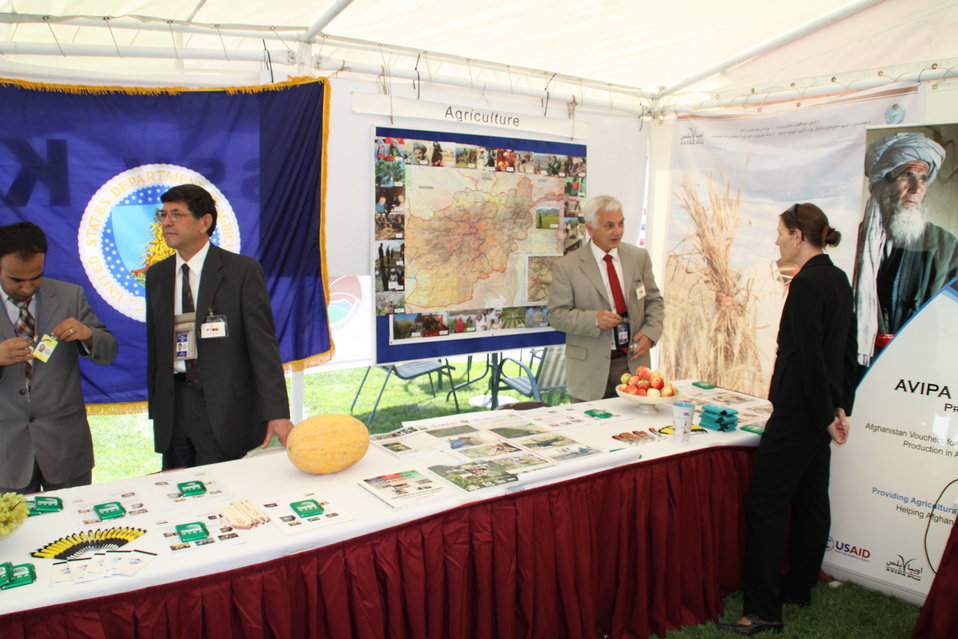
Kabul Official July 4th Celebration